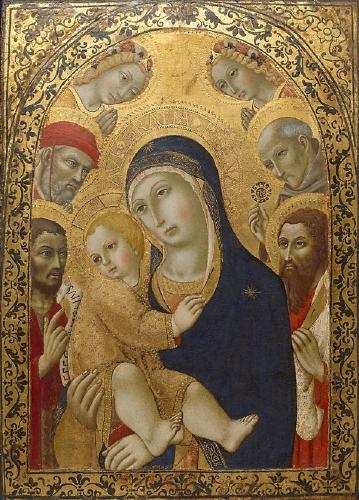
'Madonna and Child with Saints Jerome, John the Baptist, Bernardino and Bartholomew', painting by Sano di Pietro, 15th century, Art Gallery of New South Wales